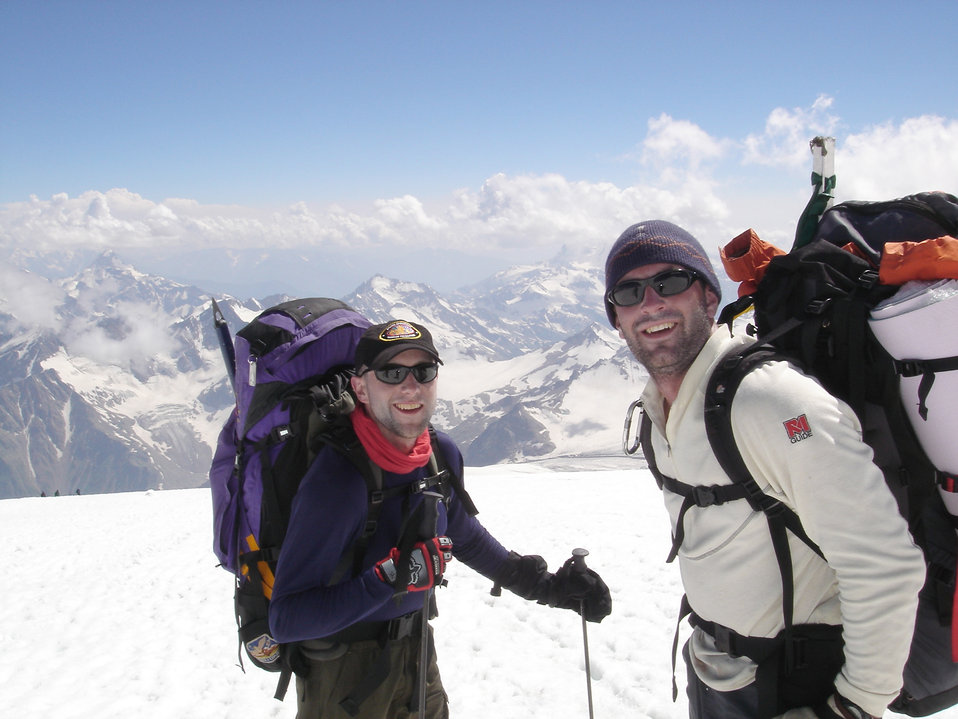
Airmen prepare for Antarctic climb

Capt. Rob Marshall prepares to ski down from the summit of Mt. Elbrus, the highest peak in Russia, with fellow Airman and mountaineer Capt. Mark Uberuaga, now with the 55th Rescue Squadron, Davis-Monthan Air Force Base, Ariz., after completing their first climb as part of the U.S. Air Force Seven Summits Challenge in July 2005. The U.S. Air Force Seven Summits Challenge is an endeavor for Air Force members to carry the Air Force flag to the highest point on each continent and to be the first U.S. military group to conquer all seven peaks. Captain Marshall is a member of the 8th Special Operations Squadron at Hurlburt Field, Fla.